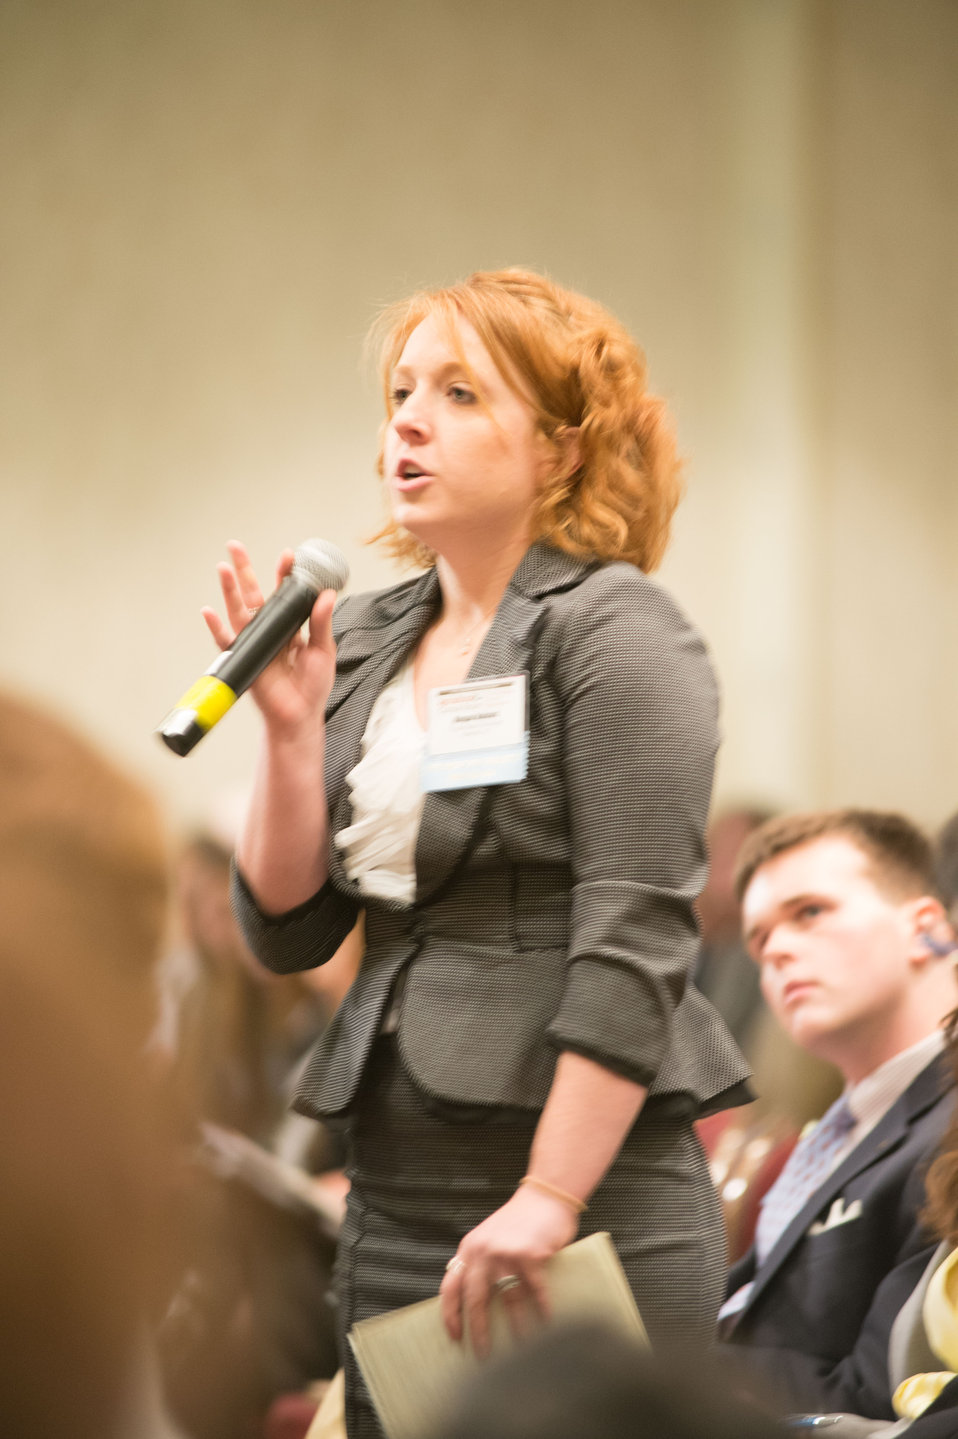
A member of the audience presents a question to the Young Farmers - Unlimited Opportunities panel at the 2014 Agricultural Outlook Forum in Arlington, VA., on Thursday, Feb. 20, 2014. The U.S. Department of Agriculture's (USDA) annual Agricultural Outlook Forum brings together the agricultural community to discuss policy, trade, science, rural development, and the economic outlook for the coming year. The Forum also focuses on forestry, health and nutrition issues, and the changing dynamics and face of rural America.USDA photo by Bob Nichols.